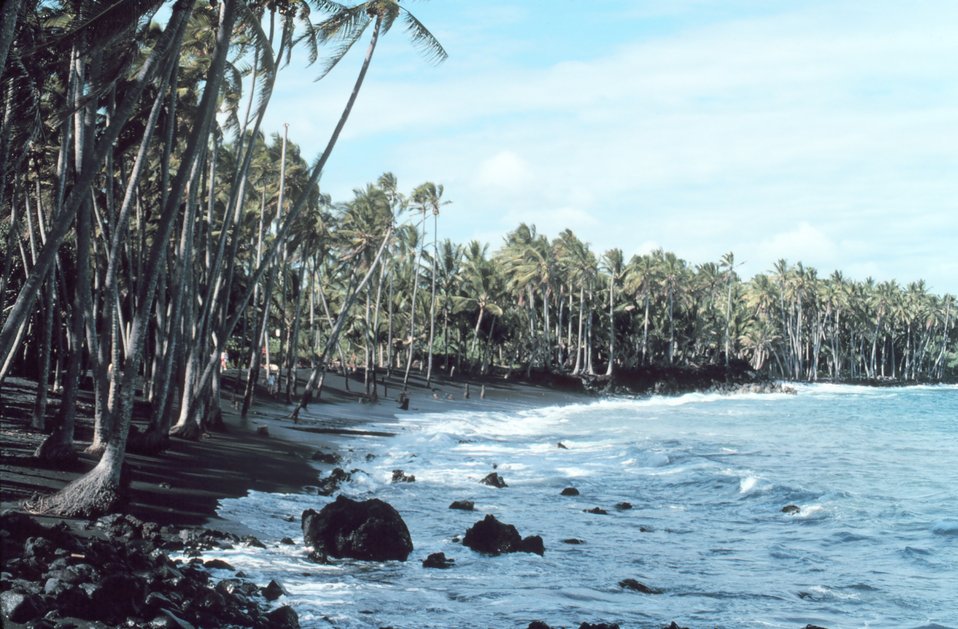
A black lava sand beach - since destroyed by lava flows.